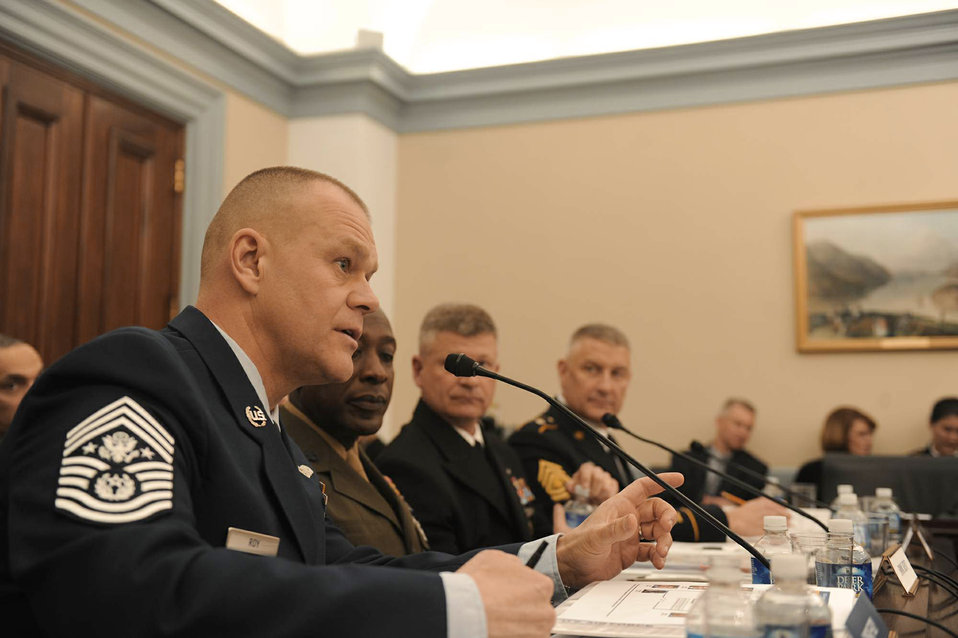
Chief Roy

Chief Master Sgt. of the Air Force James A. Roy testifies before the House Subcommittee for Military Construction, Veterans Affairs and Related Agencies in Washington, D.C., March 30, 2011. The committee focused on quality-of-life issues for enlisted members serving in the military. Roy shared the witness stand with his counterparts from the Marines, Navy and Army, who are Sergeant Major of the Marine Corps Carlton Kent, Master Chief Petty Officer of the Navy Rick West, and Sergeant Major of the Army Raymond Chandler.